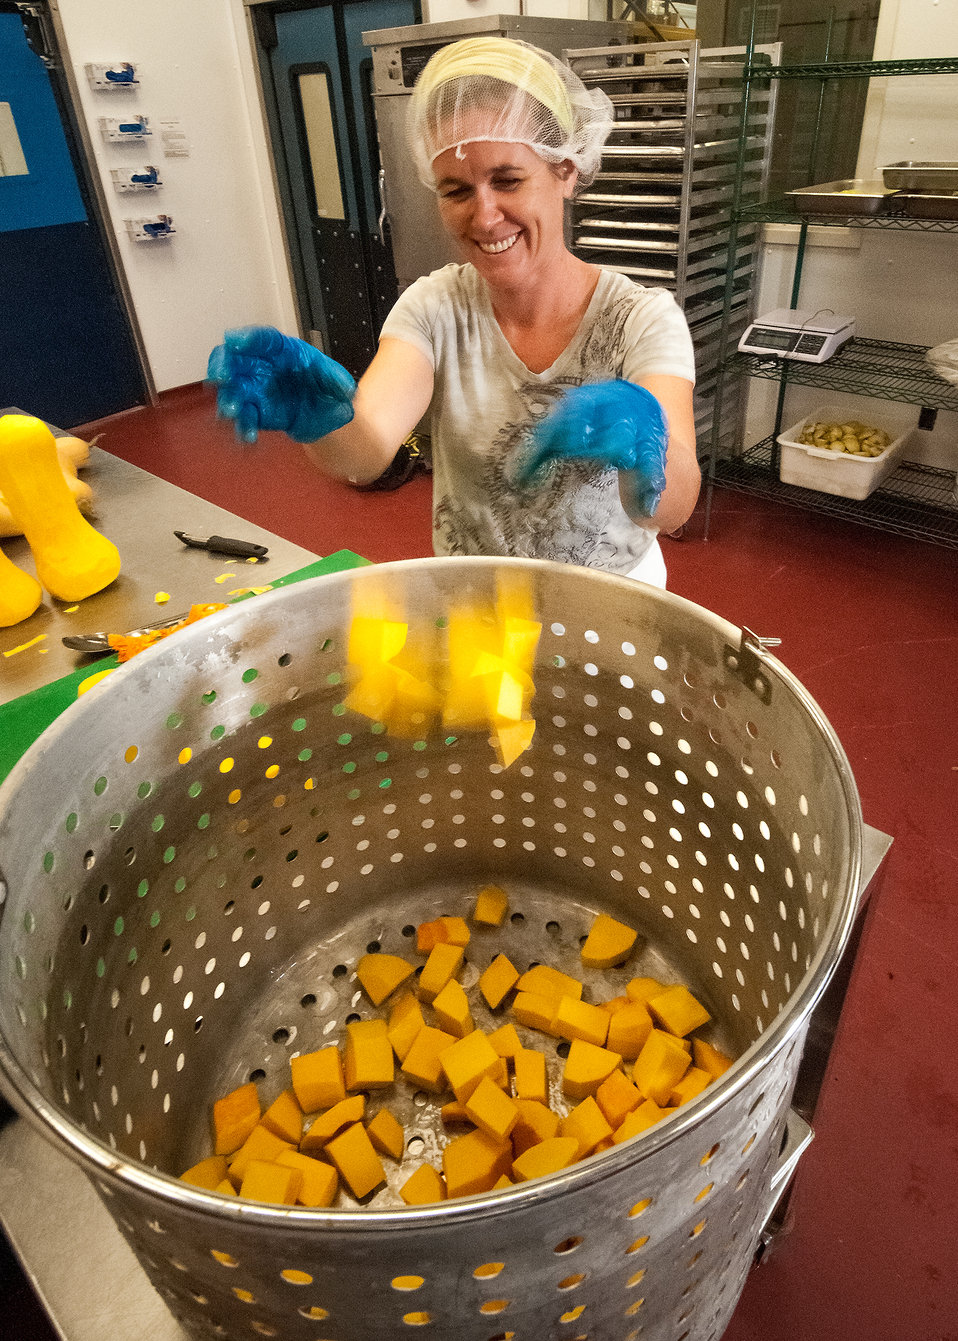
Allyson Spanier tosses butternut squash into a large pot to be combined with baked apples for her Baked Apple and Squash baby food at the Vermont Food Venture Center in Hardwick, VT. Spanier explains why she started Vermont Baby: “I wanted to provide parents with some unique, healthy, tasty options that they would feel good about feeding to their babies.” Her goals have been met. The baby food she makes is purely Vermont with organic ingredients from local farmers.The Vermont Food Venture Center, a non-profit multi-purpose incubator kitchen and food processing facility operated by the Center for an Agricultural Economy in Hardwick, VT received assistance through a U.S. Department of Agriculture (USDA) Rural Development (RD) Rural Business Enterprise Grant (RBEG). The grant offers farmers in a region of rural America that celebrates food, farm and local economy the tools necessary to convert crops to value added business to start or expand their food-based business with the potential to create jobs and increase economic opportunity on Sep. 19, 2013.